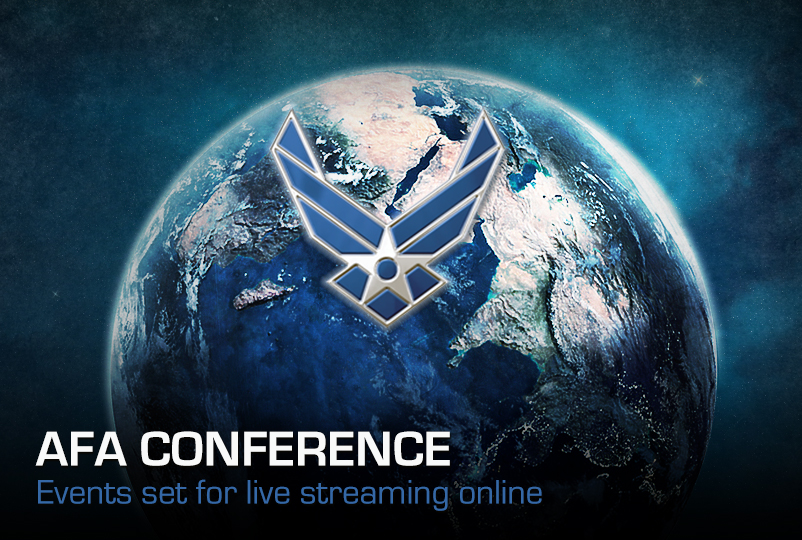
AFA conference to stream events live